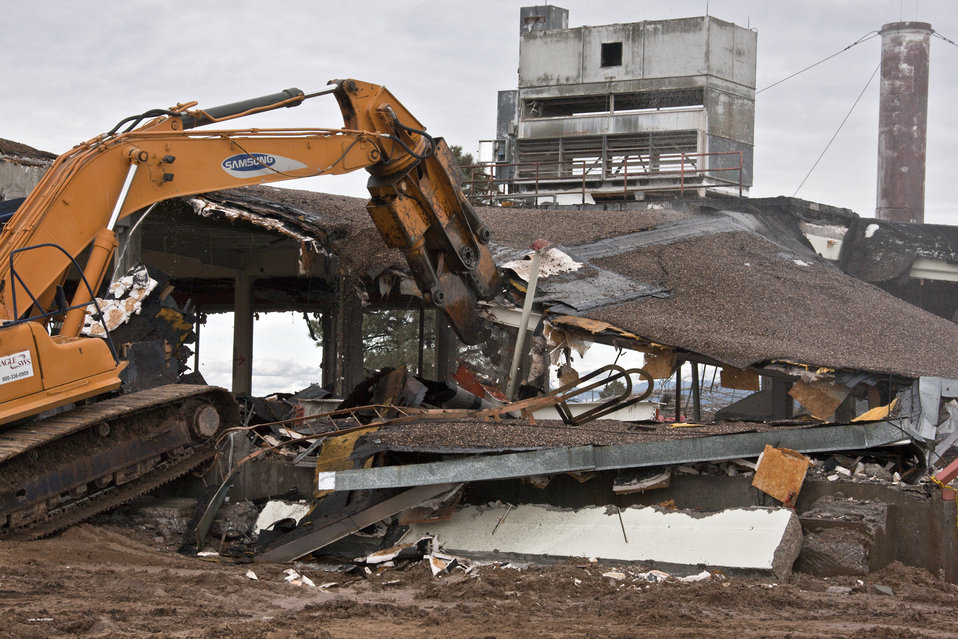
Recovery Act Workers Demolish Last of 24 Buildings and Structures at Los Alamos TA-21

Workers on Dec. 21, 2010 demolished the last and largest of 24 buildings and structures at Los Alamos National Laboratory’s Technical Area 21 slated for removal with Recovery Act funding.

Due to their age and the purposes they served, many of the buildings and structures at TA-21 were contaminated with asbestos and other chemicals and radioactive materials such as tritium, plutonium and americium. Demolition was not as easy as merely swinging a hammer or a wrecking ball and required thorough preparation and careful decontamination.